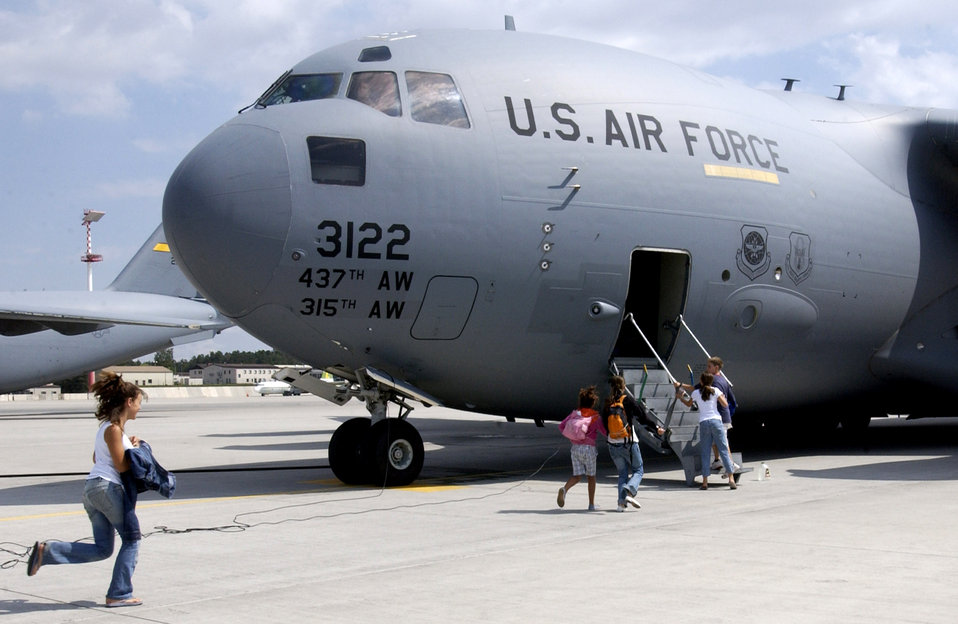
Heading to America

A young American girl runs toward a C-17 Globemaster III bound for the United States from Ramstein Air Base, Germany, on July 23. Airmen at Ramstein are providing humanitarian assistance for American citizens departing the Lebanon crisis.